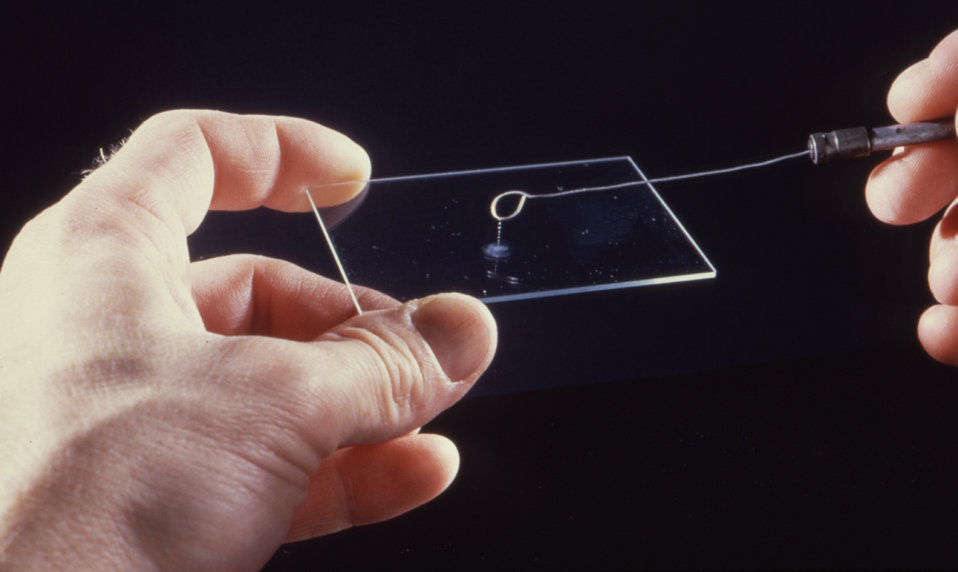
This lab technician is acquiring a sample to be tested for the presence of a gastrointestinal parasite using the 'string test'.